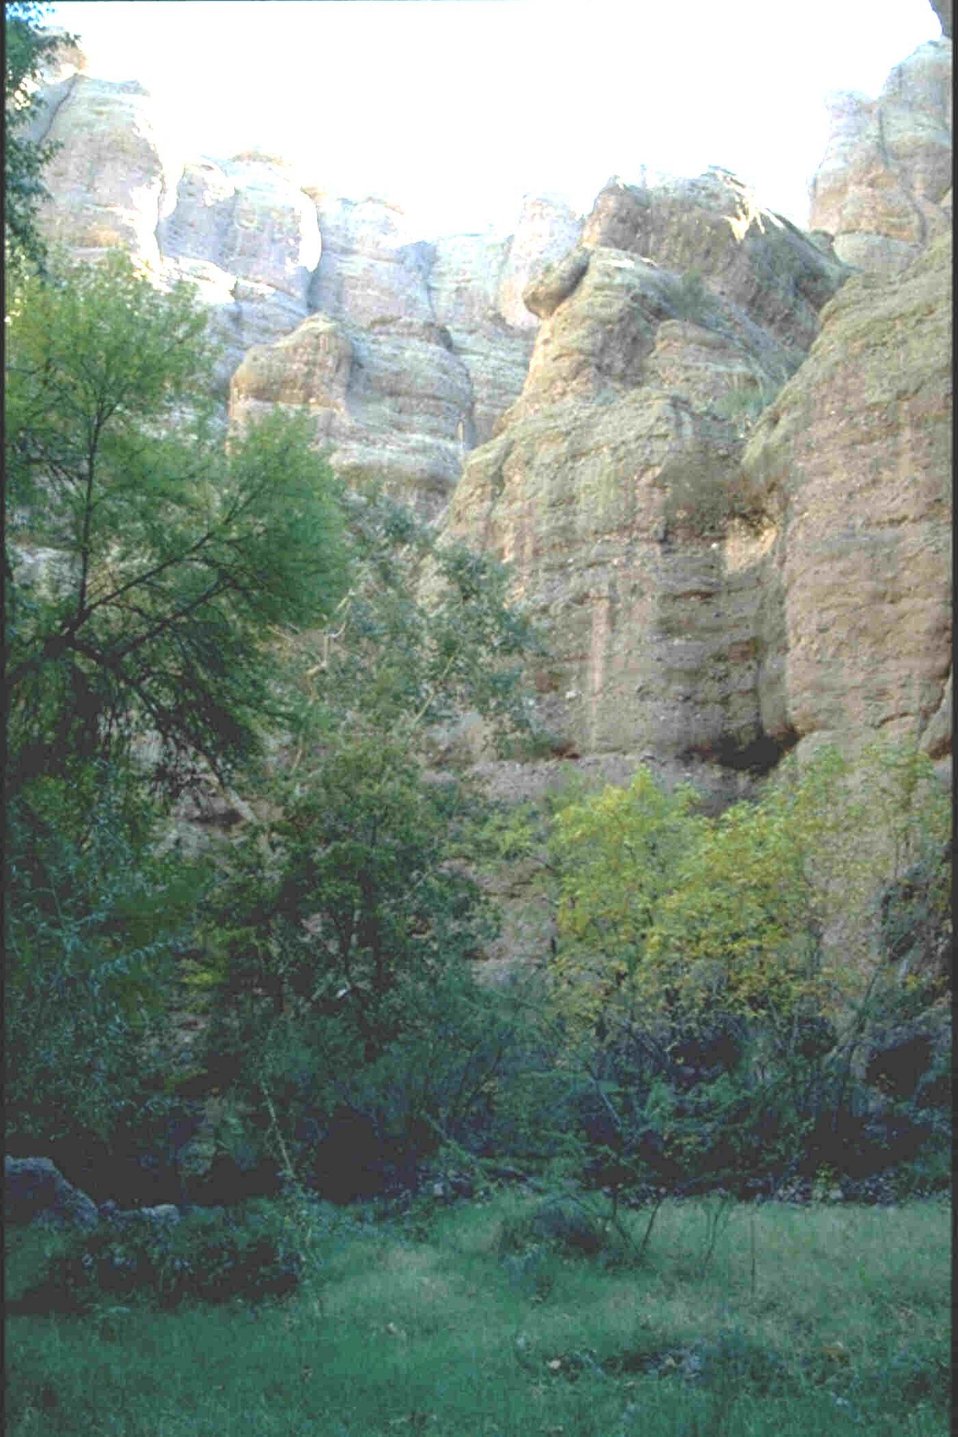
In the depths of Hell Hole Canyon